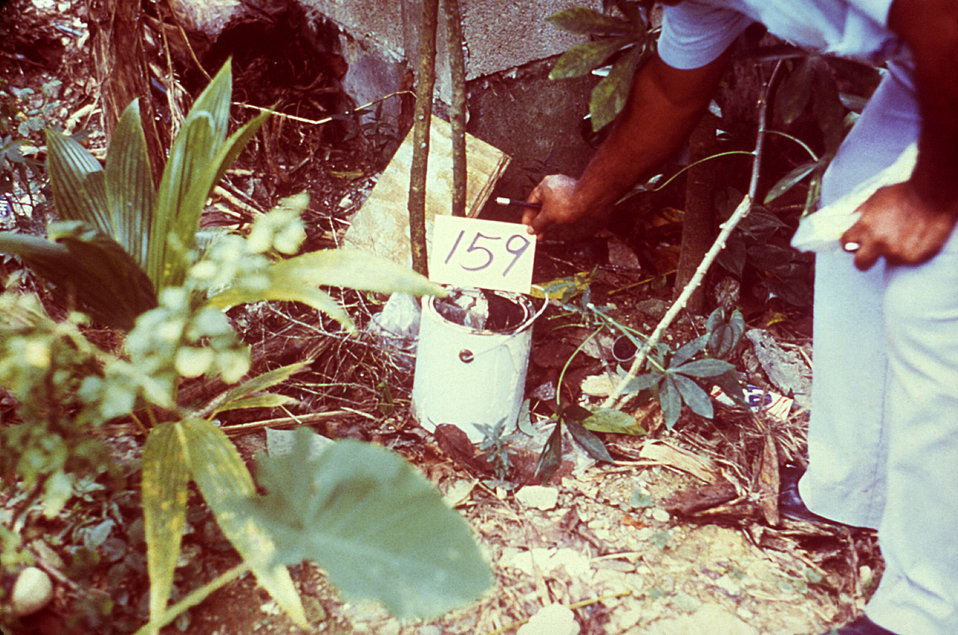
This photograph depicts an entomologic field technician inspecting some discarded paint cans for the presence of mosquitoes, primarily Aedes aegypti, which is a vector responsible for the transmission of Dengue fever to humans.